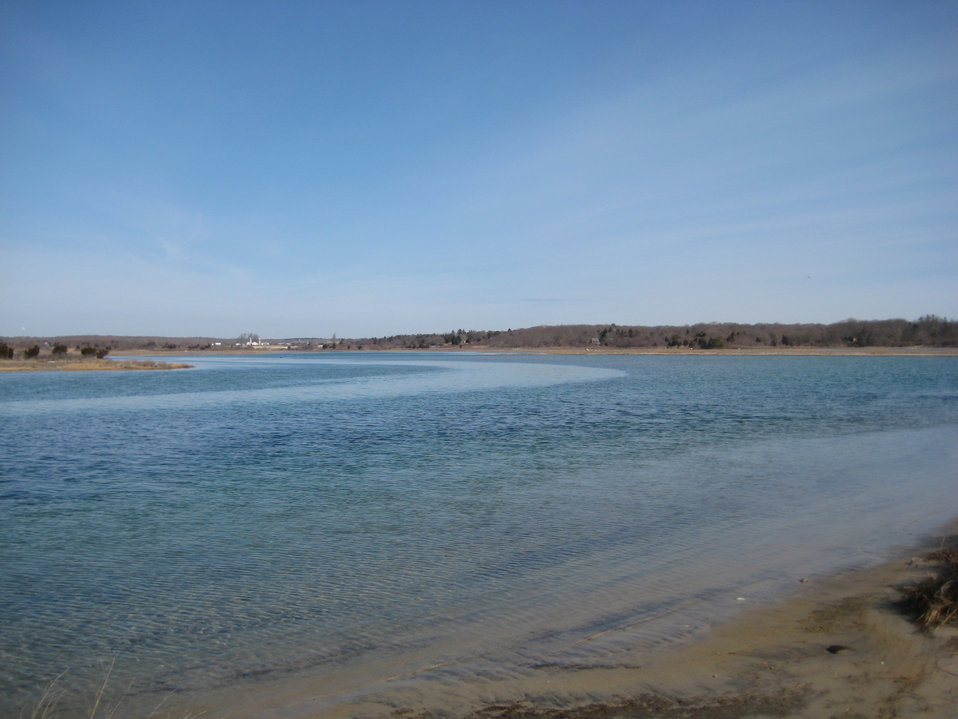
Buzzards Bay watershed in Massachusetts. Supported by the North American Wetlands Conservation Act and a coalition of conservation partners.